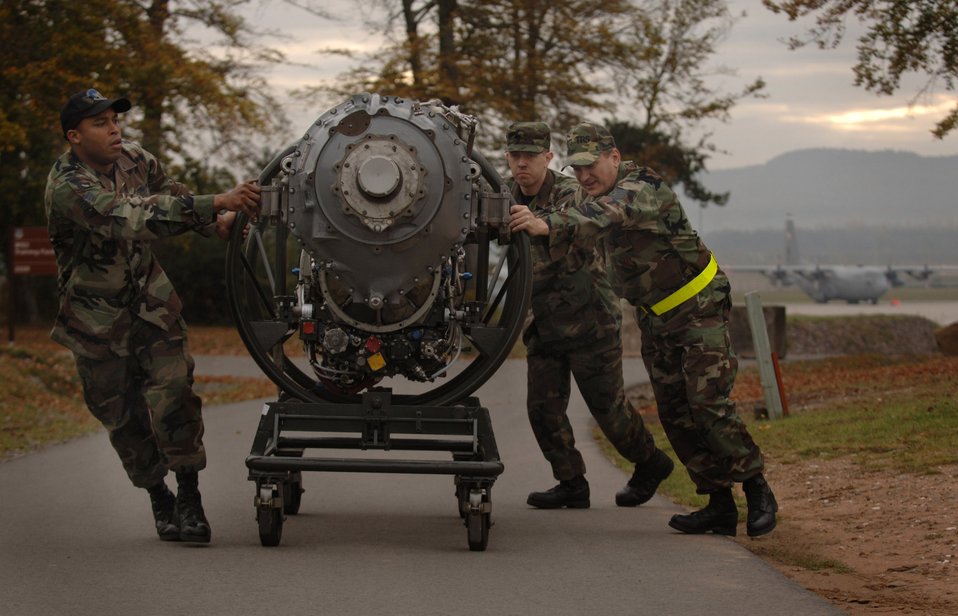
Engine overhaul

Senior Airmen Michael Lloyd and Jason Horlacher assist their training instructor, Tech. Sgt. Dan Swysgood in transporting the rebuilt C-130 Hercules engine back from the maintenance bay to the classroom Oct. 19 at Ramstein Air Base, Germany.